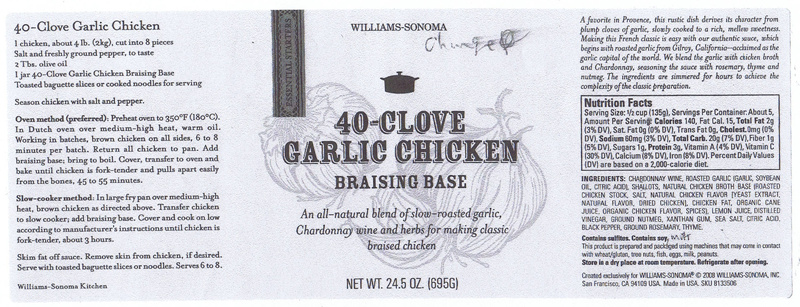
40-Clove Garlic Chicken Braising Base

August 28, 2013 – Premier Foods, LLC Announces The Recall Of Products Sold At Williams-Sonoma For Undeclared Allergens.